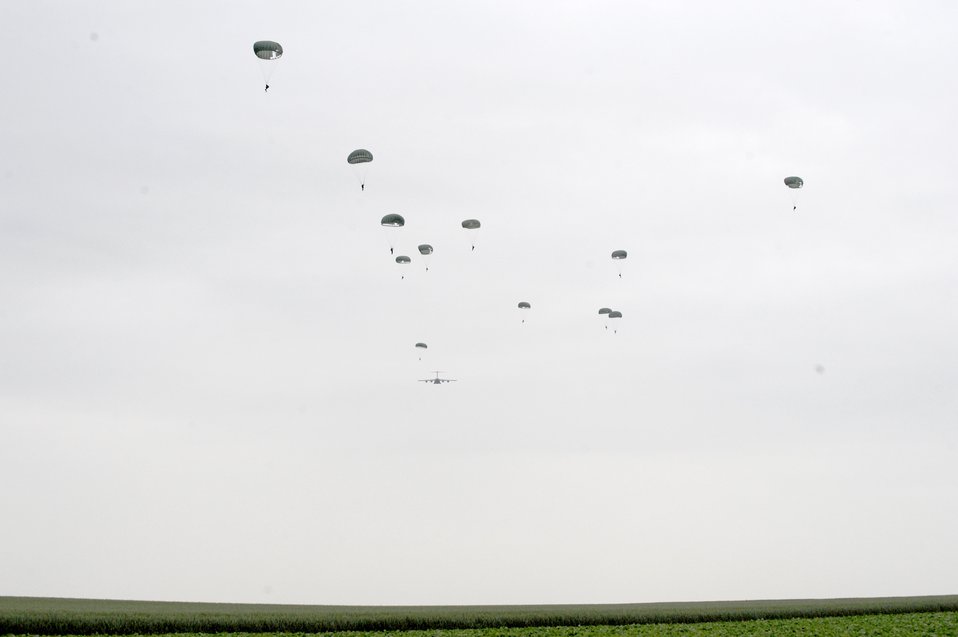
NATO Jump Week 2010

Servicemembers parachute from a C-17 Globemaster III June 17, 2010, over drop zone at Alzey, Germany, during International Jump Week 2010. This airborne jump is officially known as NATO Jump Week and was the first time a NATO jump was conducted from a C-17.